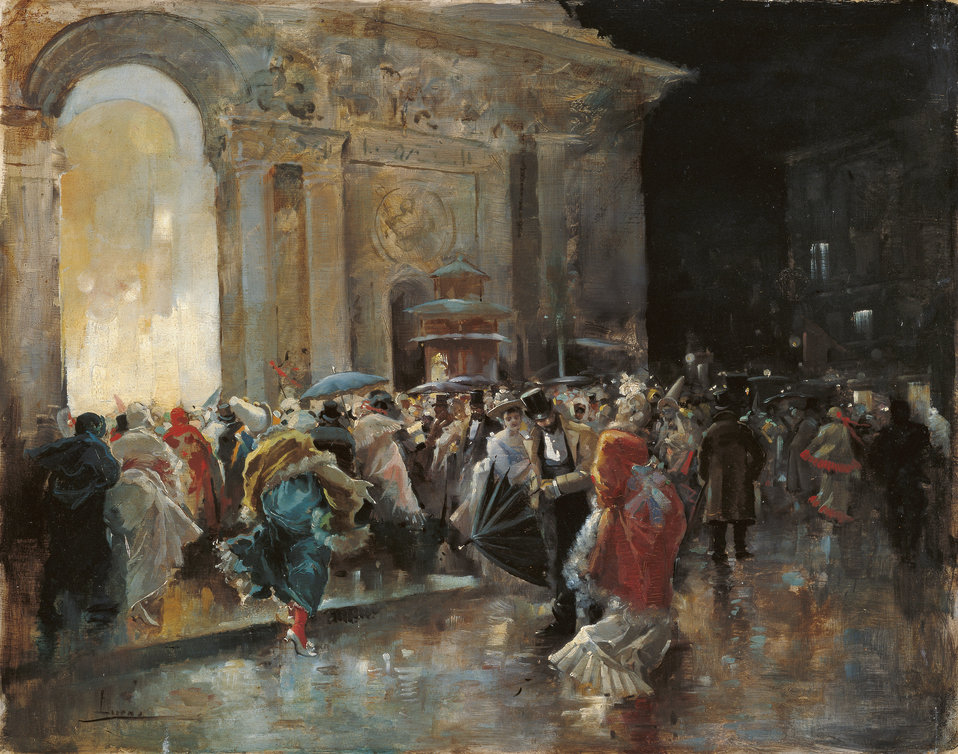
Arriving at the Theatre on a Night of a Masqued Ball Oil on panel 31 x 40 cm, Inv. CTB.1996.69 Museo Carmen Thyssen Native name Museo Carmen Thyssen Location Málaga, Spain Coordinates 36° 43′ 17″ N, 4° 25′ 22″ W Established 2011 Website www.carmenthyssenmalaga.org